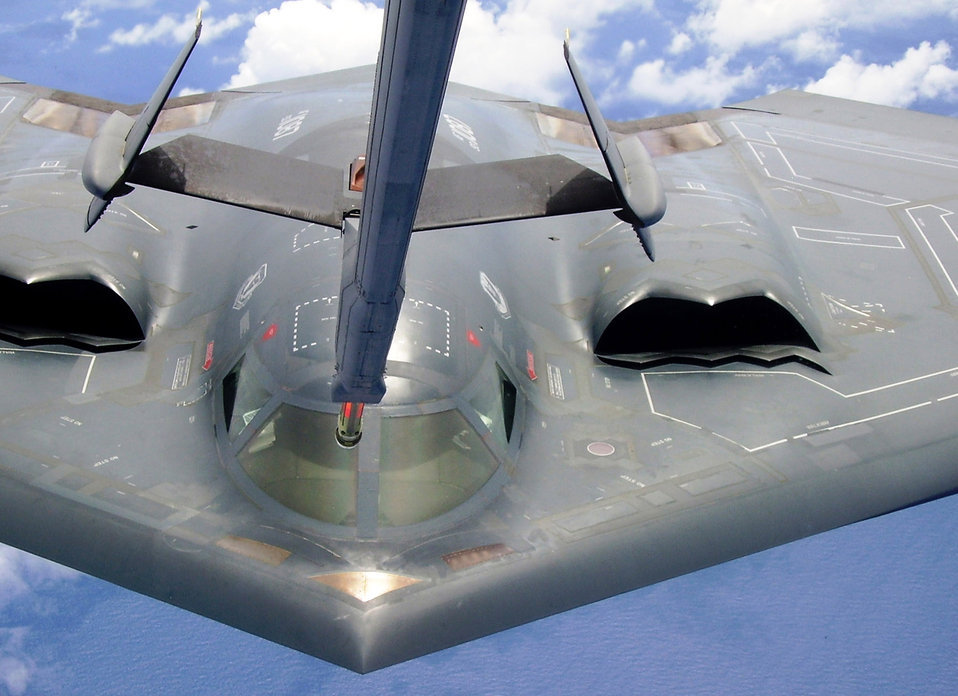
Royal Air Force pilot makes history in B-2 Spirit

A B-2 Spirit flown by Royal Air Force Squadron Leader David Arthurton and Capt. Timothy Rezac receives fuel from a KC-10 Extender during a training mission. Squadron Leader Arthurton, an RAF exchange pilot, and Captain Rezac are with the 13th Expeditionary Bomb Squadron.